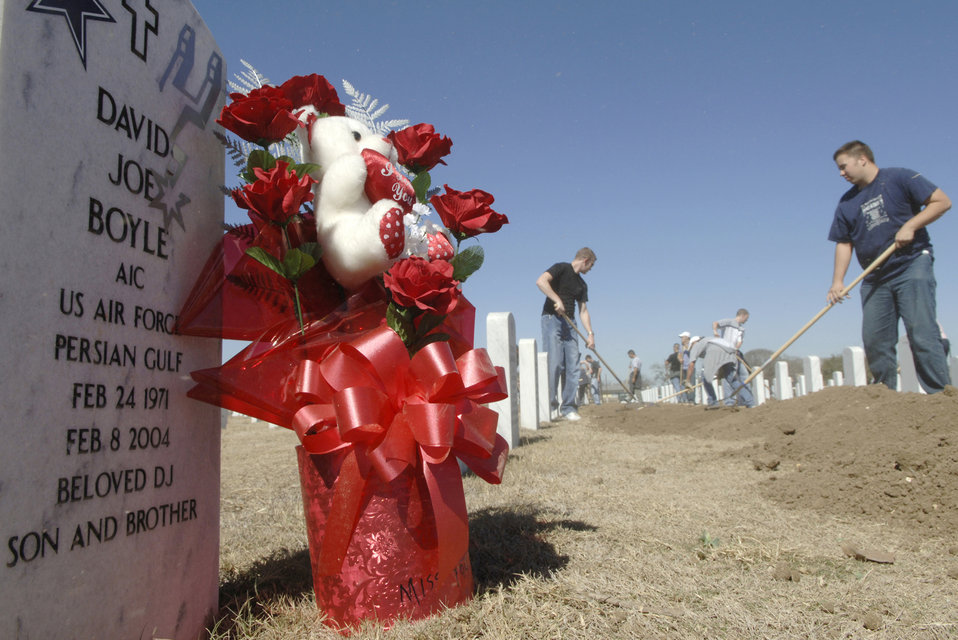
An honorable task

FORT SAM HOUSTON, Texas (AFPN) -- Airmen volunteers landscape and straighten headstones at Fort Sam Houston National Cemetery Feb. 8. The Airmen are assigned to the Cryptologic Systems Group at Lackland Air Force Base, Texas.